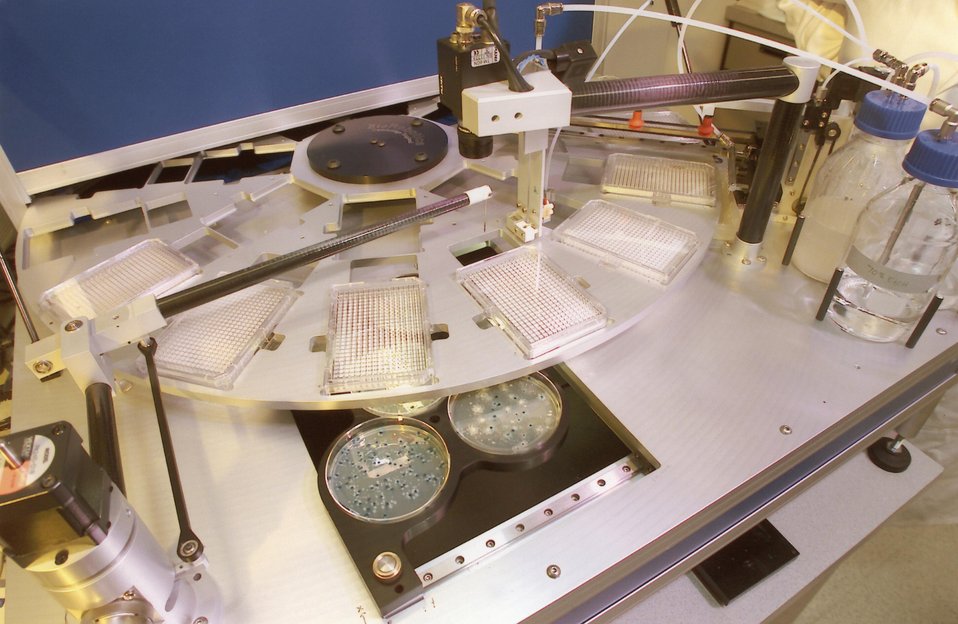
EQUIPMENT USED FOR DNA SIGNATURE DEVELOPMENT.

LLNL SCIENTISTS ARE DEVELOPING DNA-BASED SIGNATURES UNIQUE TO PATHOGENS (DISEASE CAUSING MICROBES) IN ORDER TO DETECT BIOLOGICAL AND CHEMICAL WARFARE AGENTS. THIS PROGRAM IS DESIGNED TO IMPROVE RESPONSE CAPABILITY TO BIOLOGICAL AND CHEMICAL ATTACKS ON THE CIVILIAN POPULATION.